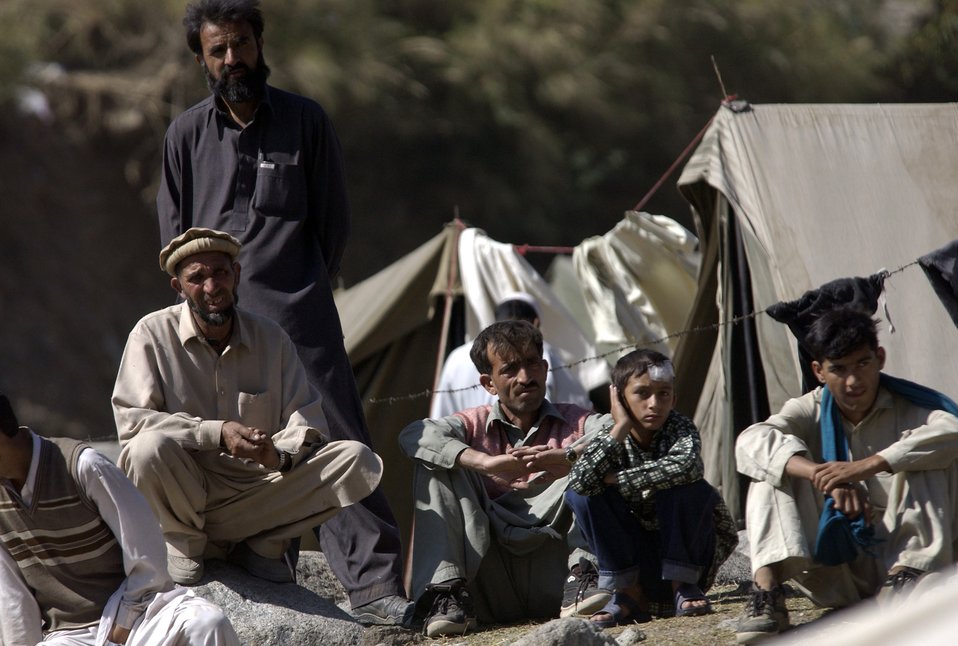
Pakistani Patience

BALAKOT, PAKISTAN -- Victims of the Pakistani earthquake watch a Navy MH-53 helicopter delivers disaster relief aid Oct. 20. The United States is participating in a multinational humanitarian assistance and support effort lead by the Pakistani Government to bring aid to victims of the devastating earthquake that struck the region.